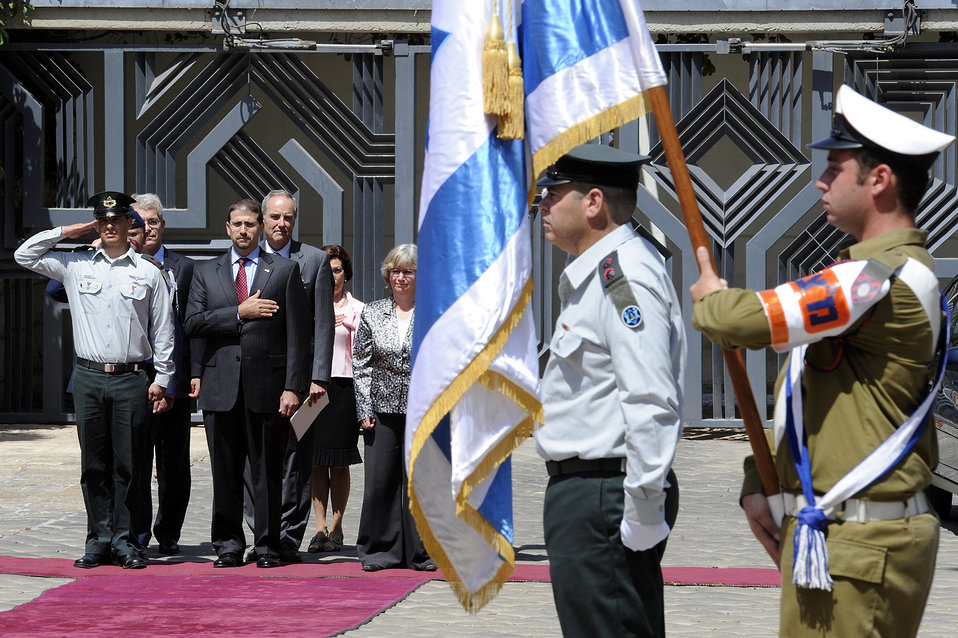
Ambassador Shaprio Prepares To Present His Credentials

U.S. Ambassador to Israel Daniel B. Shapiro prepares to present his credentials to Israeli President Shimon Peres at the President's residence in Jerusalem on August 3, 2011.